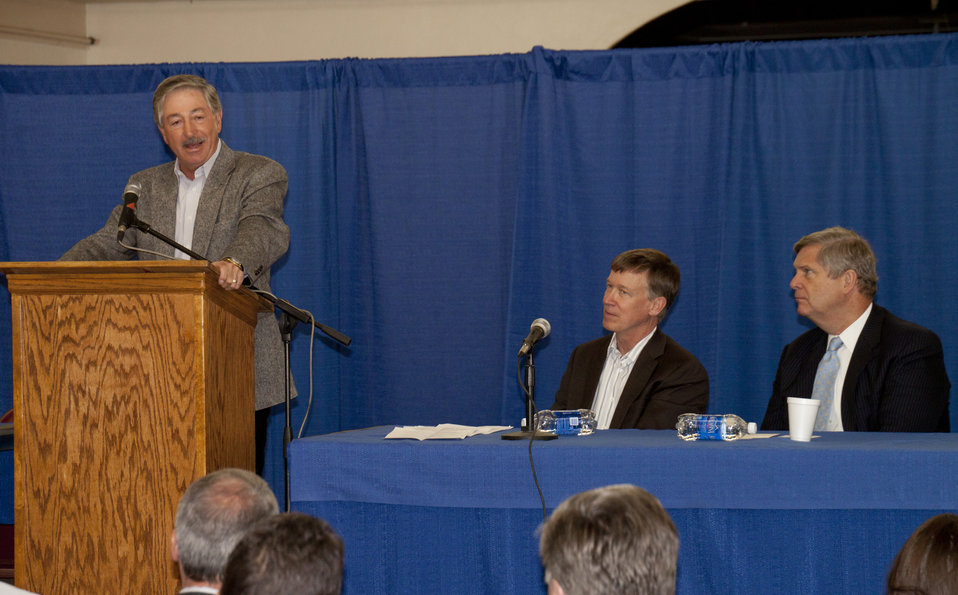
Colorado Agricultural Commissioner John Salazar, speaking as Colorado Governor John Hickenlooper and Agriculture Secretary Tom Vilsack listen at the Forum and Panel Discussion “Trade and Exports: Bringing Rural and Urban Development Together” at the Colorado State Fairground, 4H Auditorium in Pueblo, CO., on Thursday, October 11, 2012.